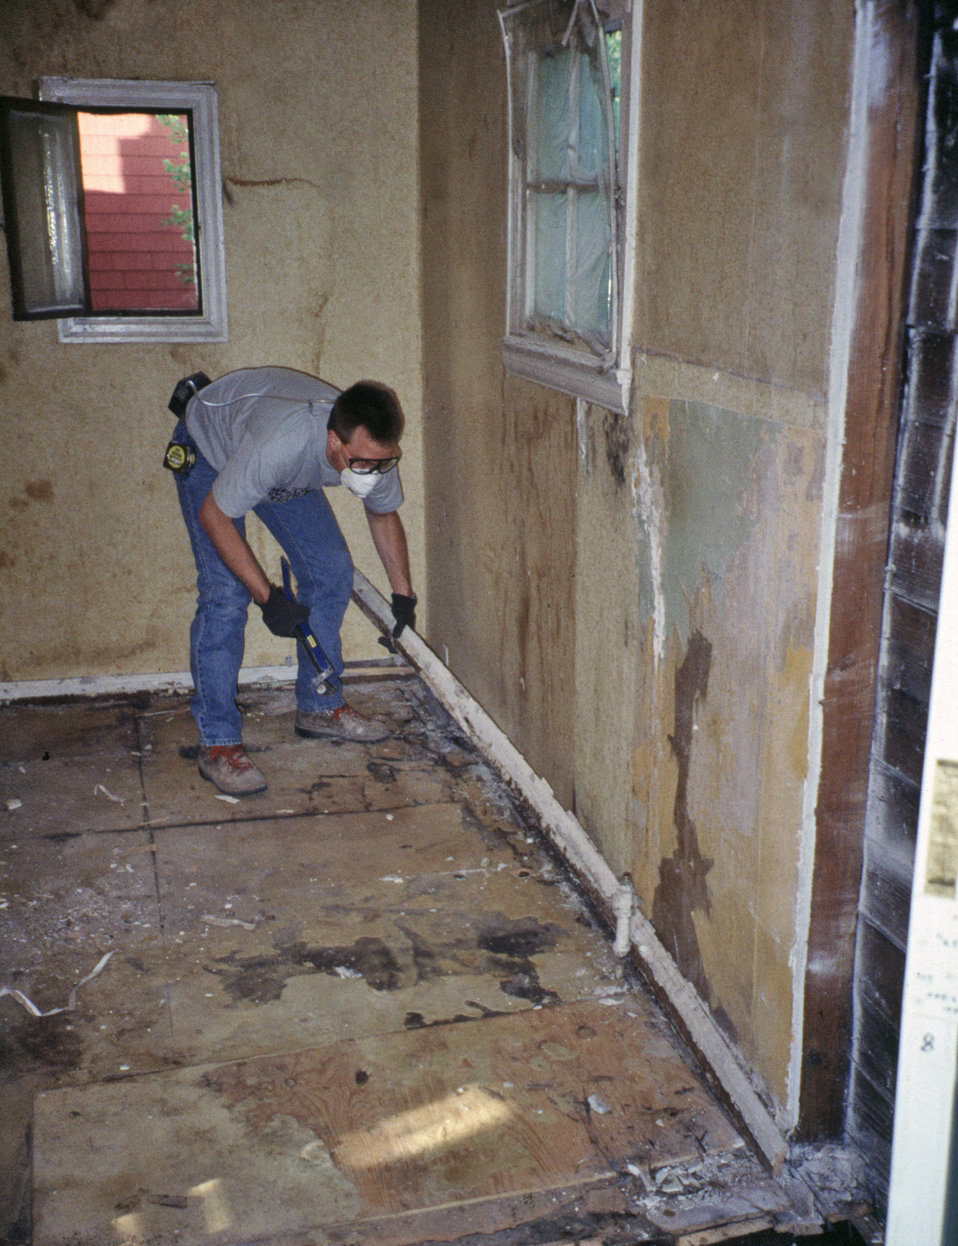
This 1993 photograph shows a worker removing a wood baseboard covered with lead-based paint, demonstrating renovation methods typically used on residences where lead-based paint was present.